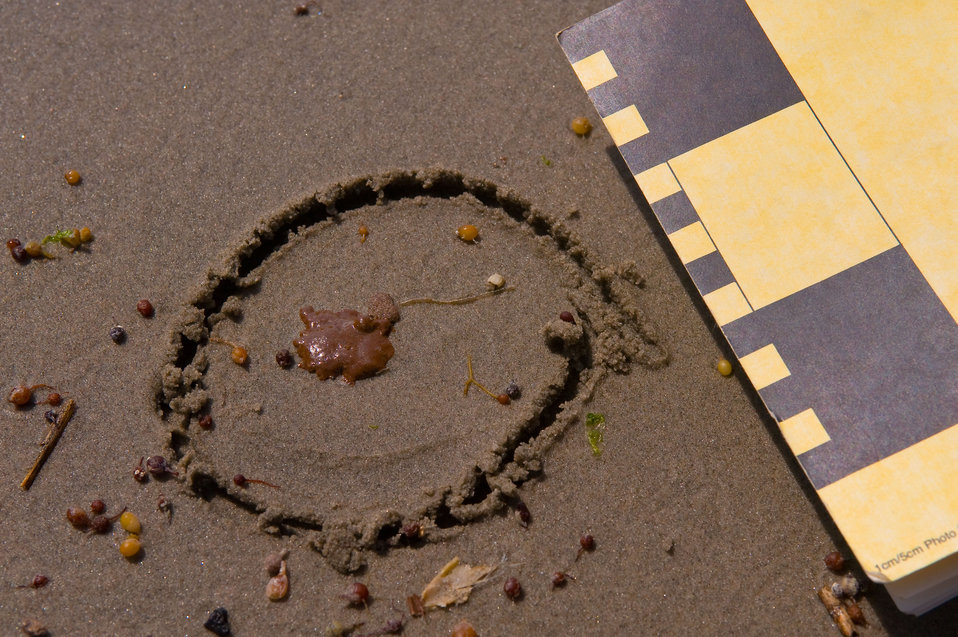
May 14, Globs of oil on Lafourche Beach, La.

Globs of oil on Lafourche Beach, La.